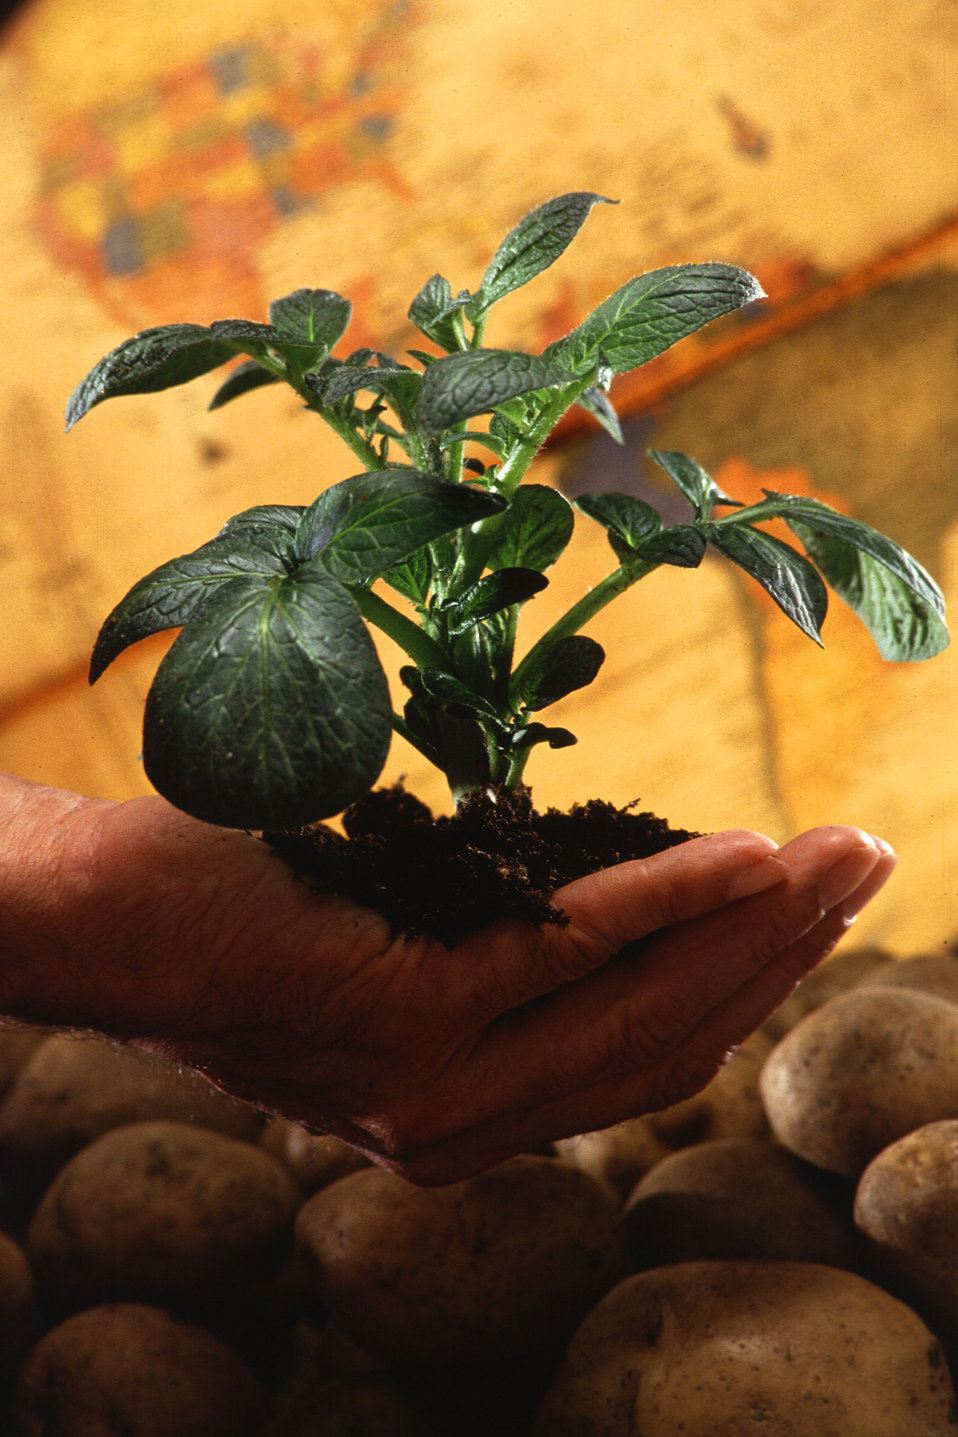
A potato plant breeder holds potato plant in his hand. Breeders are working to unite desirable processing and fresh-market characteristics with late blight resistance to ensure the continuing worldwide availability of this valuable food staple.